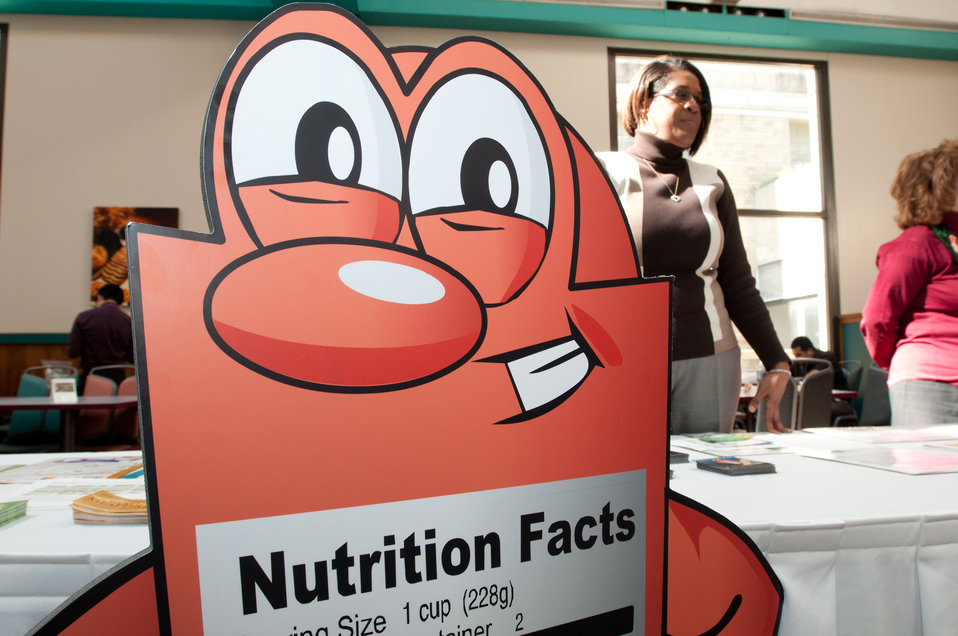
Food and Drug Administration (FDA)’s Label Man character was seen at the Department of Agriculture celebration of the introduction of the Dietary Guidelines for Americans 2010, an informational event in the Whitten Café in Washington, D.C., on Wednesday, March 2, 2011. The event had representatives from Agricultural Marketing Service (AMS); Agricultural Research Service (ARS - including Food and Nutrition Information Center - FNIC, and Food Safety Information Center – FSIC); Economic Research Service (ERS); Food, Nutrition & Consumer Services (FNCS); Food Safety and Inspection Service (FSIS); National Institute of Food and Agriculture (NIFA); USDA Office of Operations (Departmental Management); Food and Drug Administration (FDA); and Sodexo.